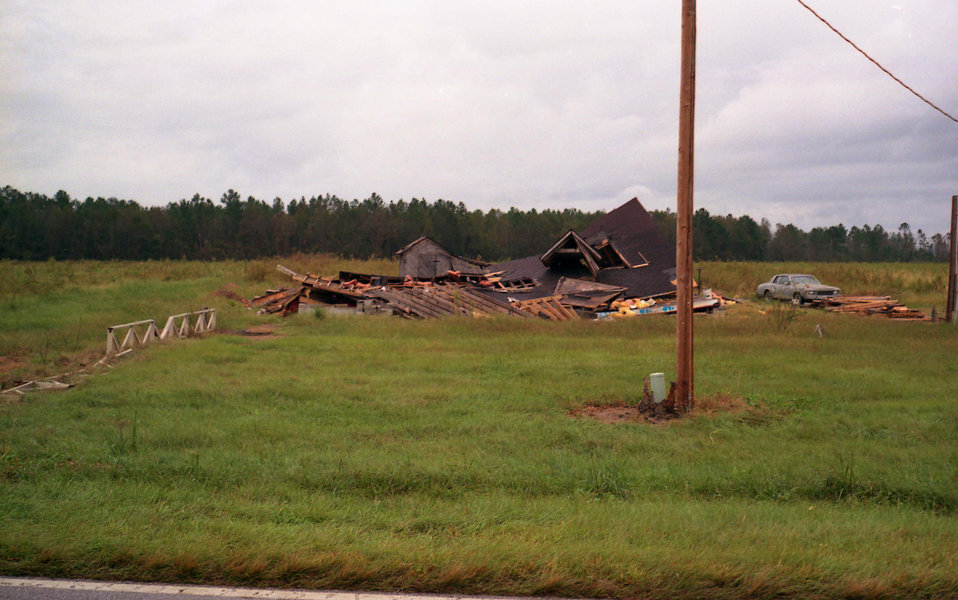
This photograph depicted a South Carolina farm house that was destroyed after hurricane Hugo made landfall north of Charleston in 1989.